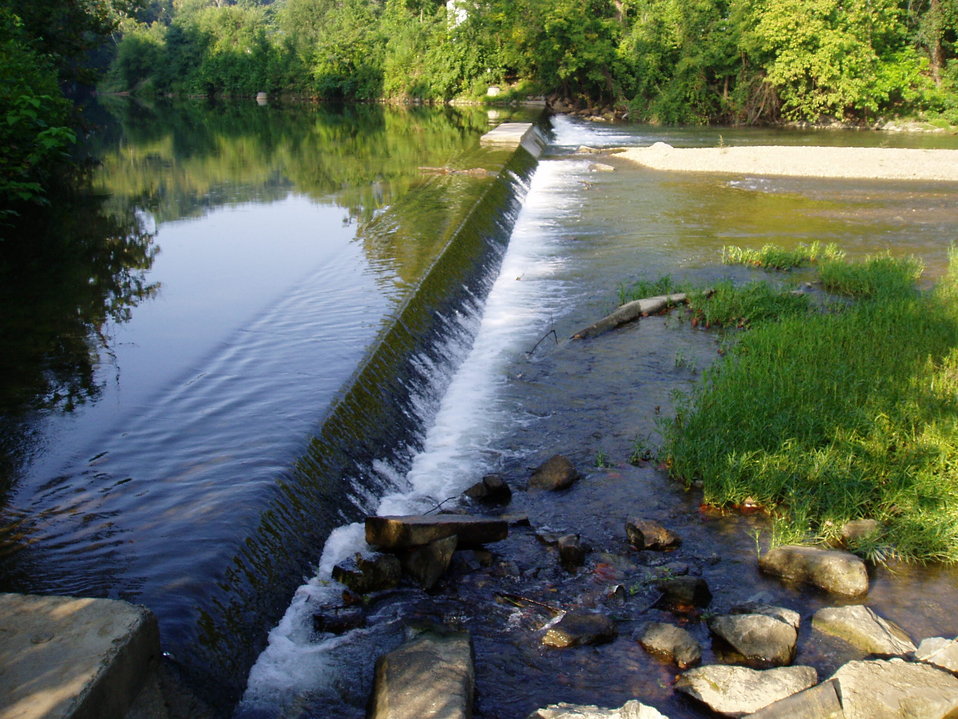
Wasena Dam Prior to Removal

Wasena Dam on the Roanoke River in Roanoke, Virginia.